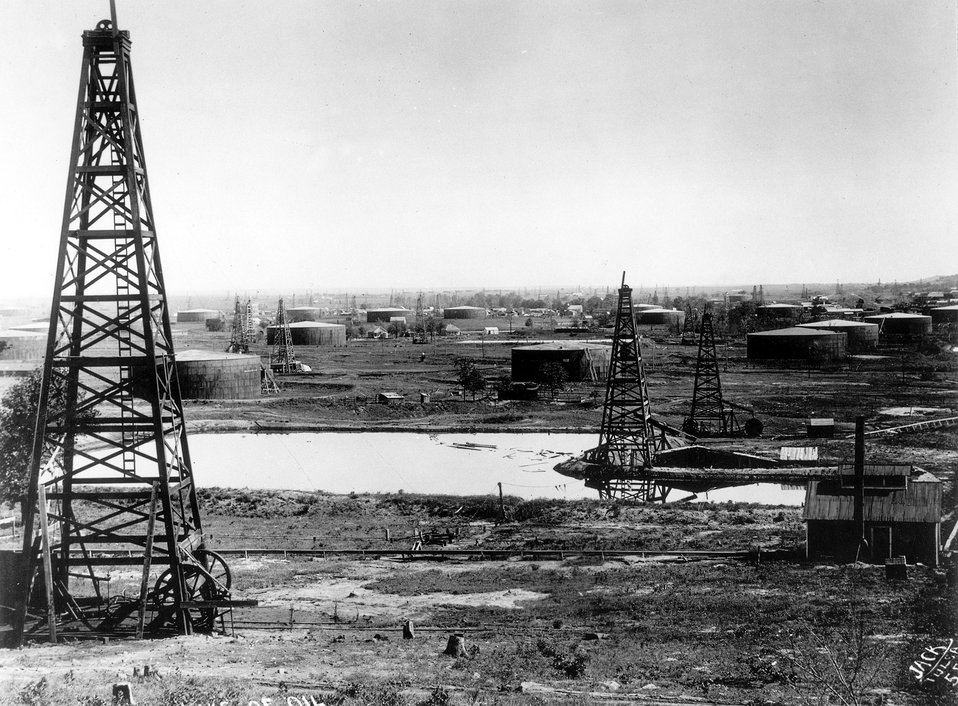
Lake of oil. Oil and gasoline fields of Oklahoma.